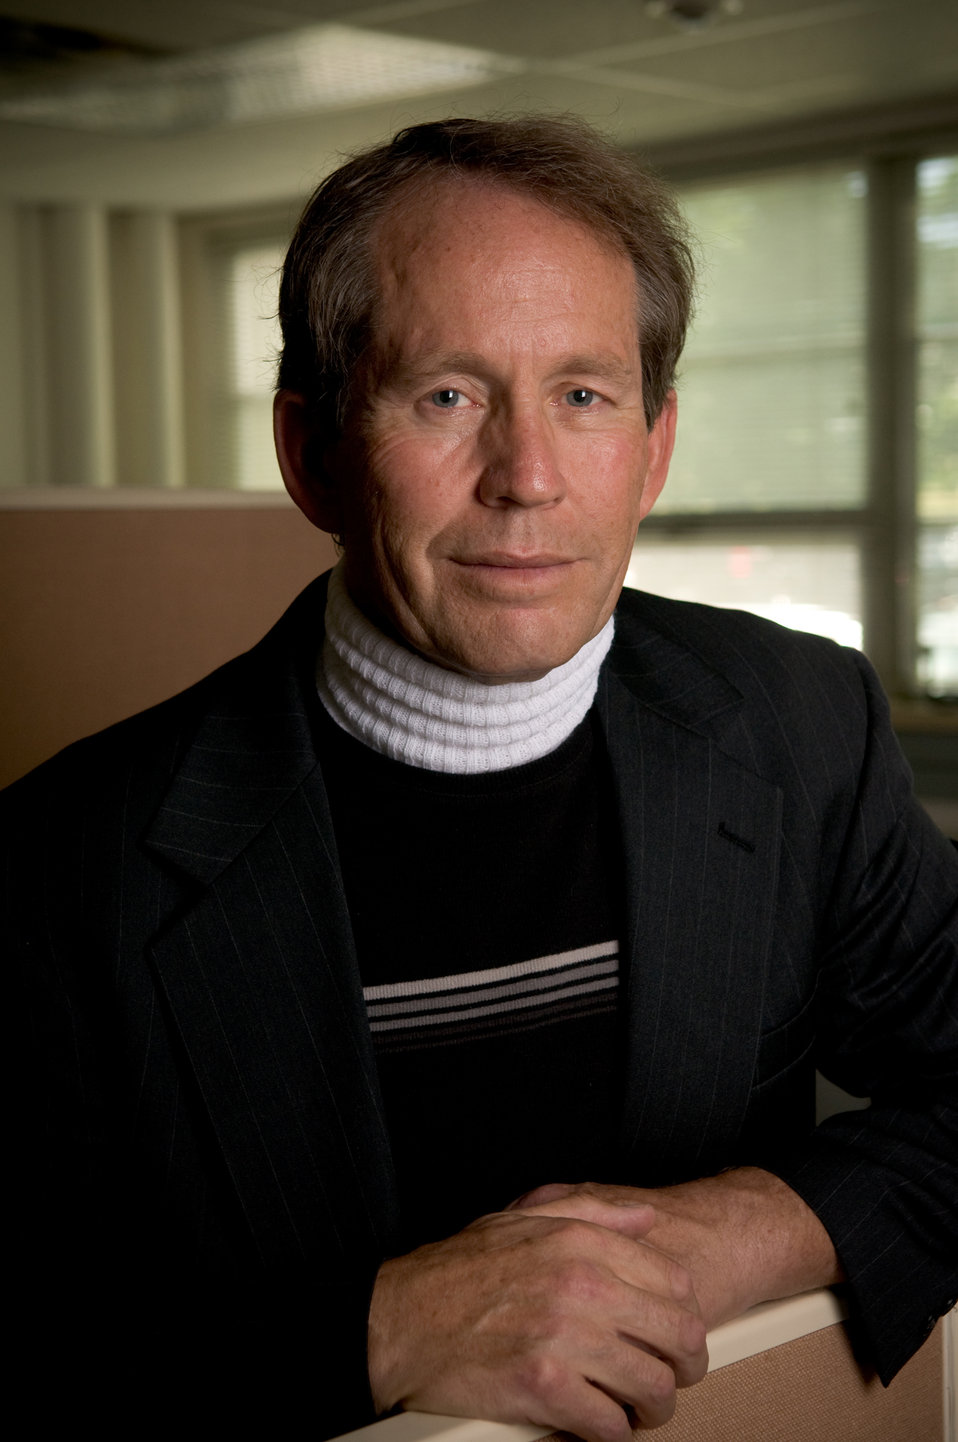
James C. Bergquist

Portrait of James C. Bergquist.